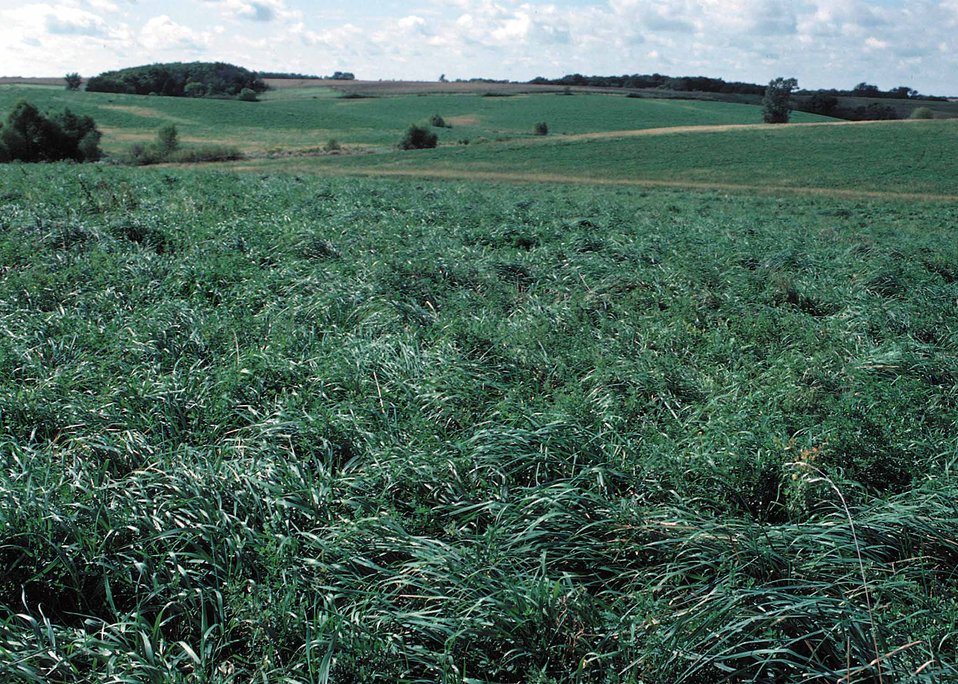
Grass and legumes combine for ground cover and wildlife habitat in a field put into the Conservation Reserve Program in Clarke County, Iowa.